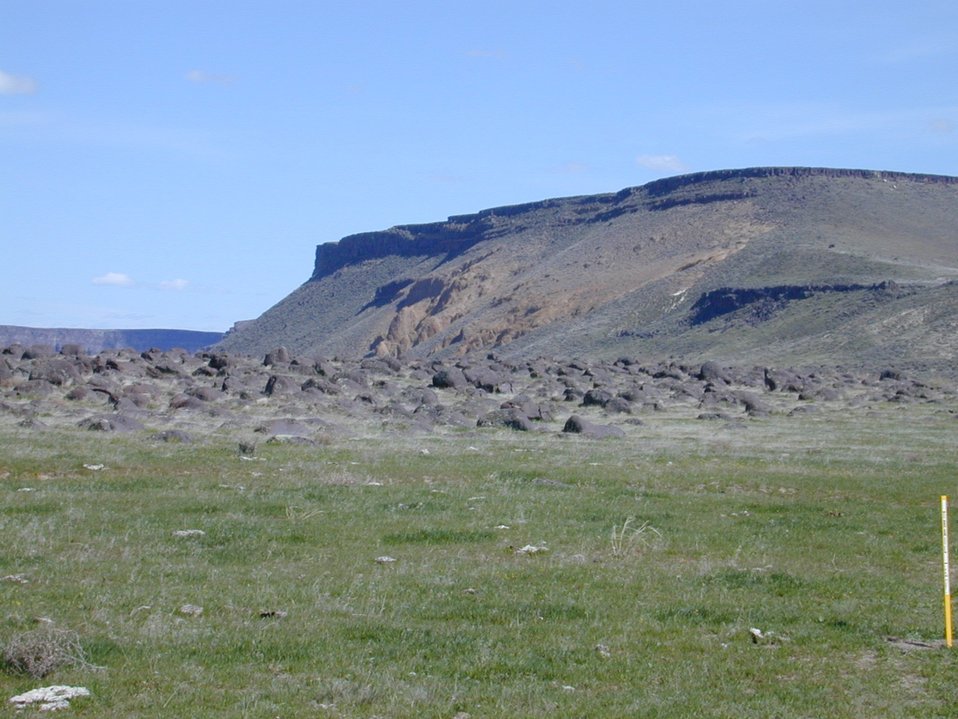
Snake River Birds of Prey National Conservation Area Lower Snake River District LSRD Snake River Canyon